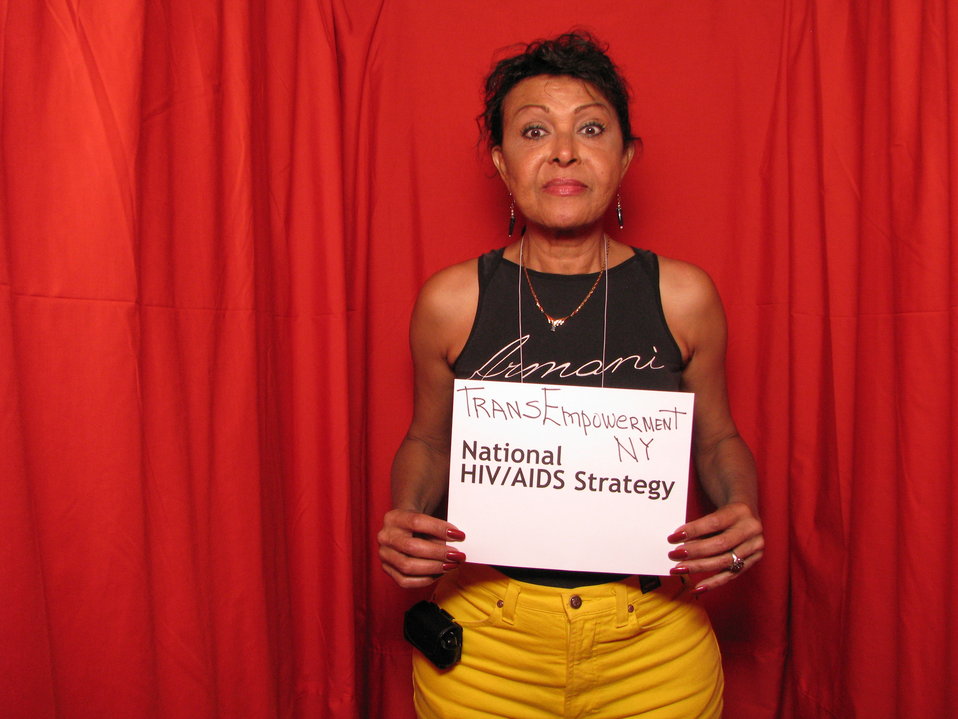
TransEmpowerment NY National HIV/AIDS Strategy

From the AIDS.gov photo booth at the U.S. Conference on AIDS, September 2010 (Orlando, FL).